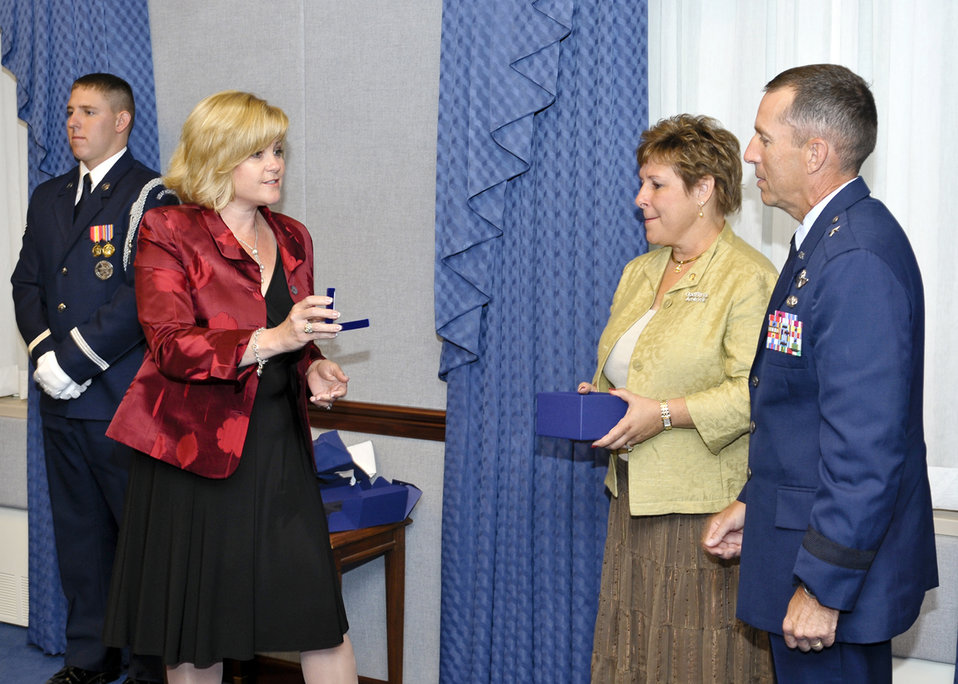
O'Malley Award

Sharon O'Malley Burg, daughter of the late Gen. Jerome and Diane O'Malley, presents Brig. Gen. Brett Williams with a set of brigadier general rank worn by General O'Malley as a special tribute to carry on the O'Malley legacy. The presentation of the rank was part of a ceremony at the Pentagon Sept. 11, 2009, where General Williams and his wife, Marianne, were honored with the 2009 General and Mrs. Jerome O'Malley Award. The award was established after the O'Malleys, who were known for their leadership and contributions to Air Force families and communities, were killed in a plane crash in 1985.